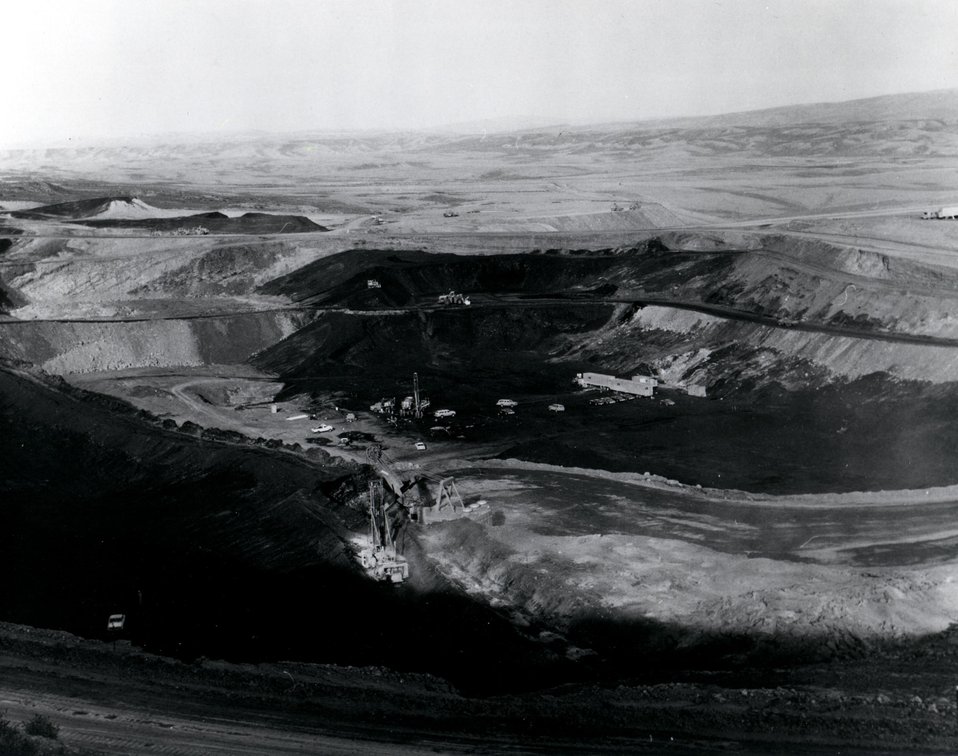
As part of an Energy Research and Development Administration's project to determine if underground gasification of deep coal seams is feasible, a team of scientists and engineers from the Lawrence Livermore Laboratory have conducted experiments centering around the use of small charges of chemical high explosives at a coal outcrop of the Kemmerer Coal Company in Kemmerer, Wyoming. In this photograph, a drilling operation is being conducted in a whole being drilled at Kemmerer. Circa 1975.